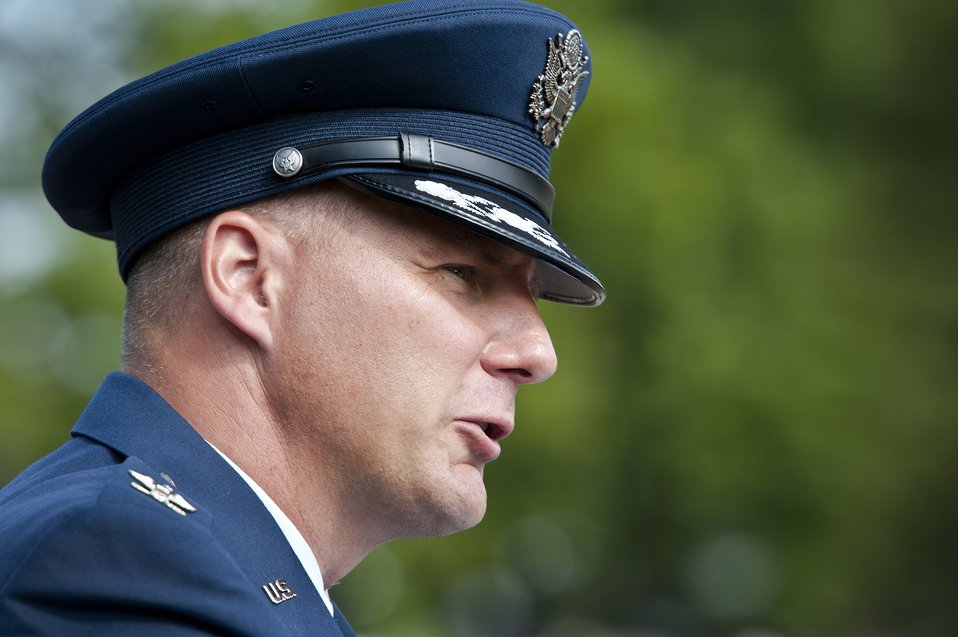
Air Advisor Memorial dedication

Colonel Olaf Holm, the commandant of the Air Advisory Academy, gives a
speech during the Air Advisor Memorial dedication ceremony at Joint
Base McGuire-Dix-Lakehurst, N.J., July 27, 2012. Holm was the creative
force behind the memorial project.